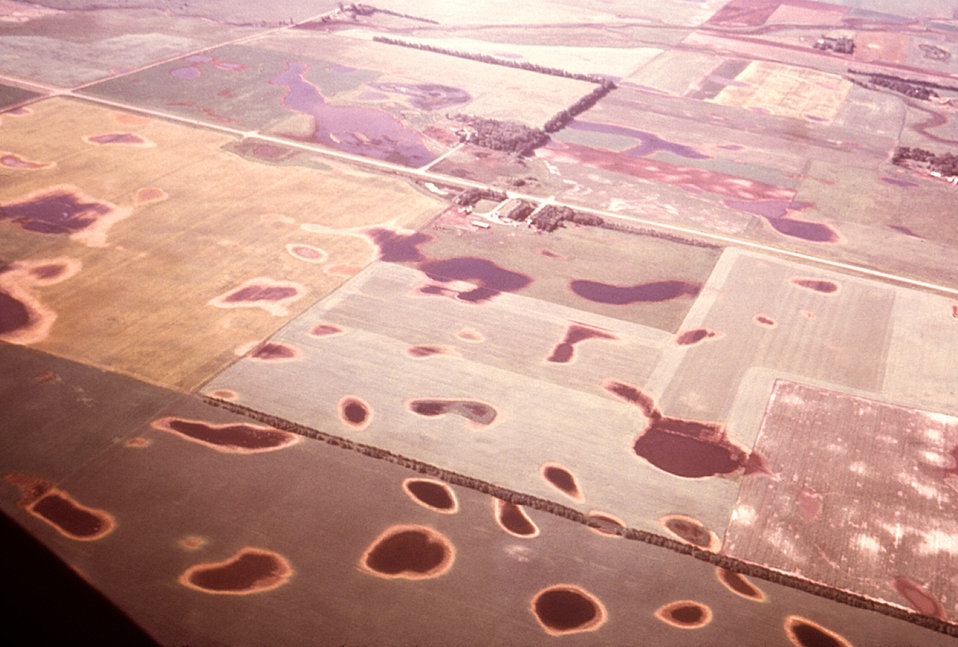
This 1981 aerial photograph was taken while flying over the prairie pothole wetlands of North Dakota in the Red River region, during a 1975 Western Equine Encephalitis (WEE), and St. Louis Encephalitis (SLE) epidemic in that area.